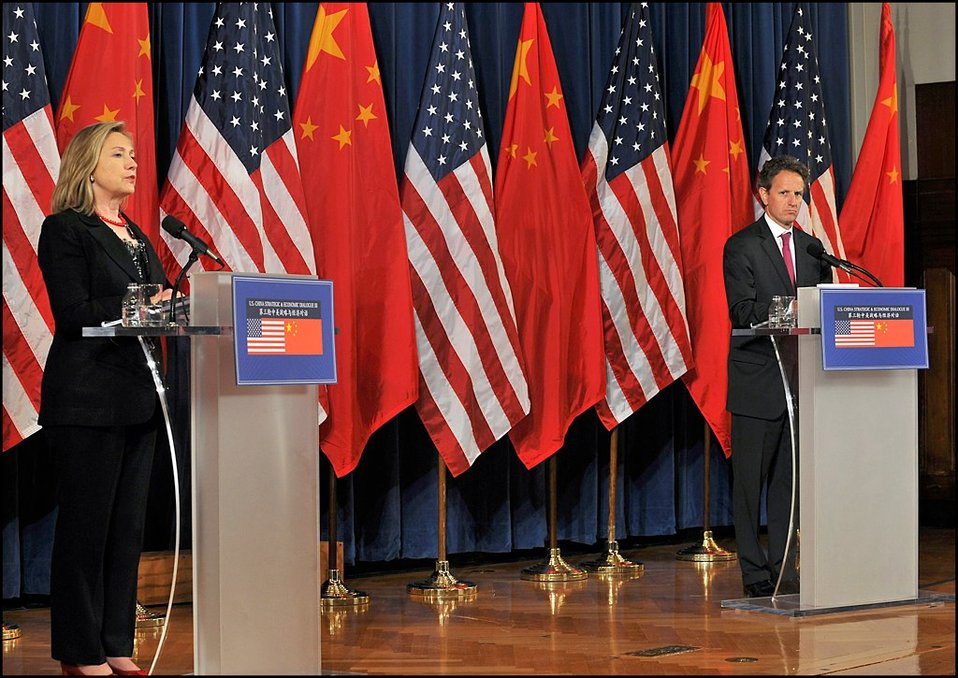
U.S.-China Strategic and Economic Dialogue

After the conclusion of the U.S.-China Strategic and Economic Dialogue, Secretaries Clinton and Geithner hosted a press conference.